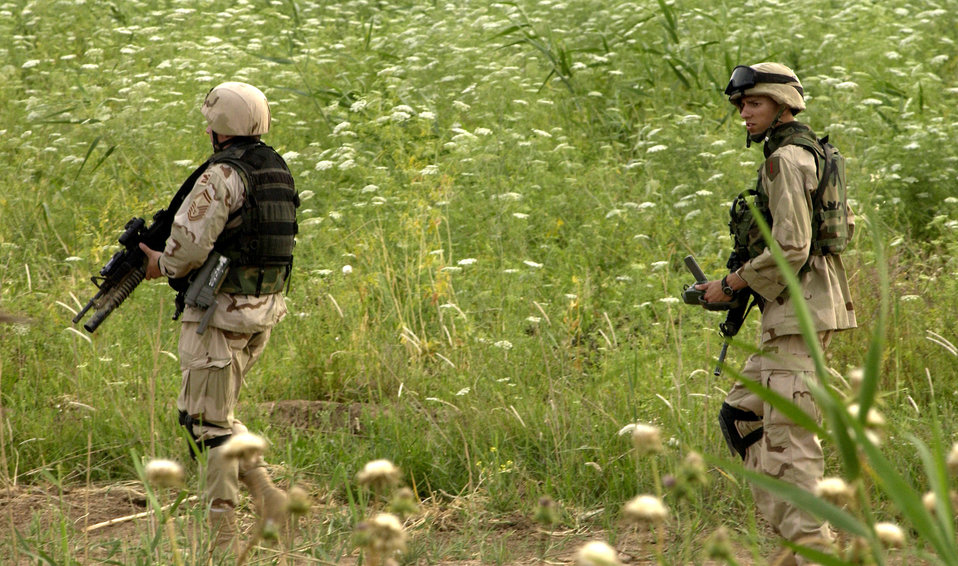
On patrol

BALAD AIR BASE, Iraq -- Senior Master Sgt. Tim Tyvan and Army 1st Lt. Josh Walter patrol an area here April 26. Sergeant Tyvan is a tactical air control party Airman from the 116th Air Support Operations Squadron, and Lieutenant Walter is assigned to the 1st Infantry Division.